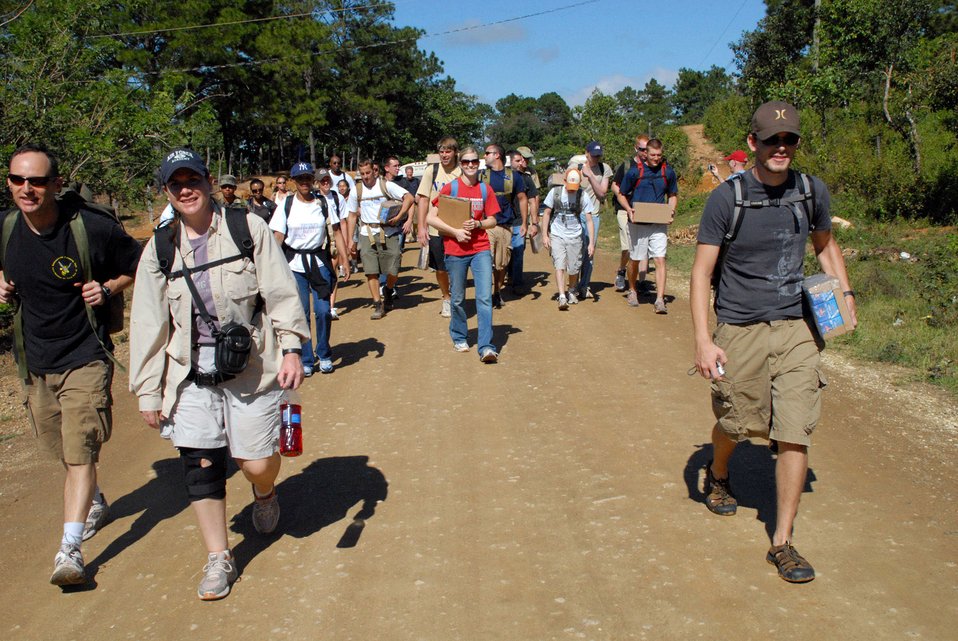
Celebrating Thanksgiving in a whole new way

A group of approximately 70 servicemembers from Joint Task Force-Bravo at Soto Cano Air Base, Honduras, begin an 11-mile round trip hike up a mountain to deliver more than 600 pounds of food to local villagers Nov. 17. The hike allowed servicemembers to celebrate Thanksgiving with those less fortunate.